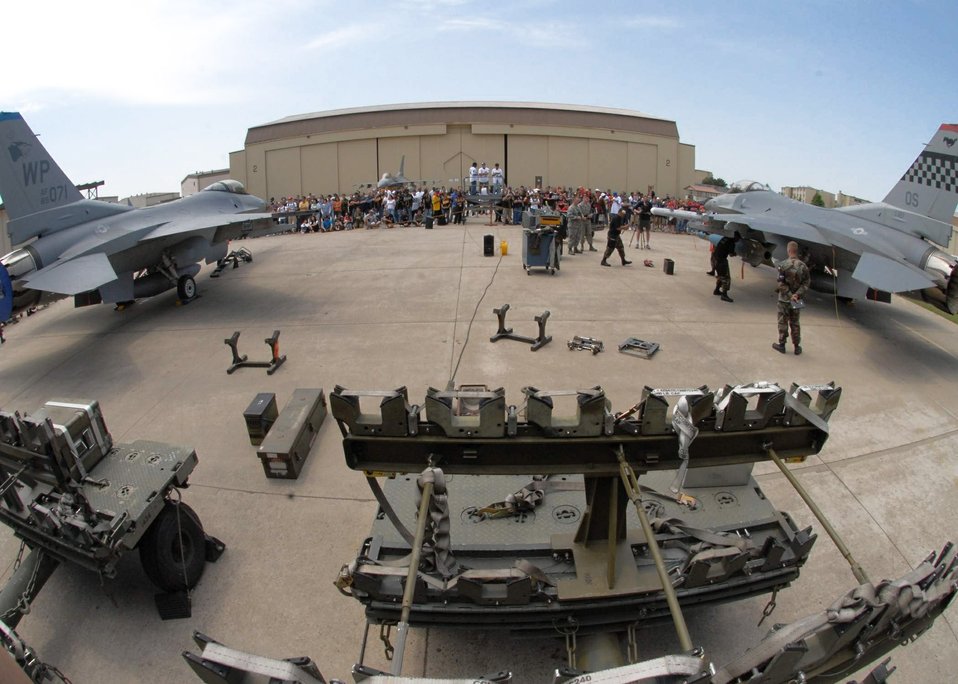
Kunsan hosts peninsula-wide weapons load competition

Members from the 35th Aircraft Maintenance Unit from Kunsan Air Base, South Korea, and the 36th Aircraft Maintenance Unit from Osan AB, South Korea, compete against each other during a peninsula-wide weapons load competition May 10 at Kunsan AB.